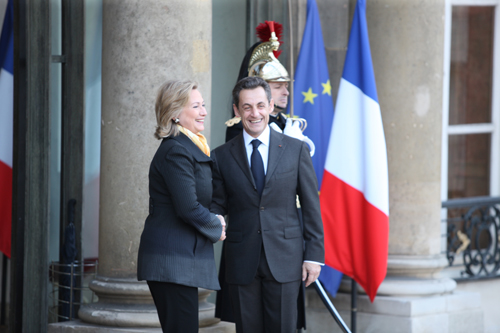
Secretary Clinton Is Greeted By French President Sarkozy

U.S. Secretary of State Hillary Rodham Clinton bids farewell to U.S. Ambassador to France, Charles H. Rivkin, and his wife, Mrs. Tolson, at Le Bourget Airport in Paris, France, on March 15, 2011.